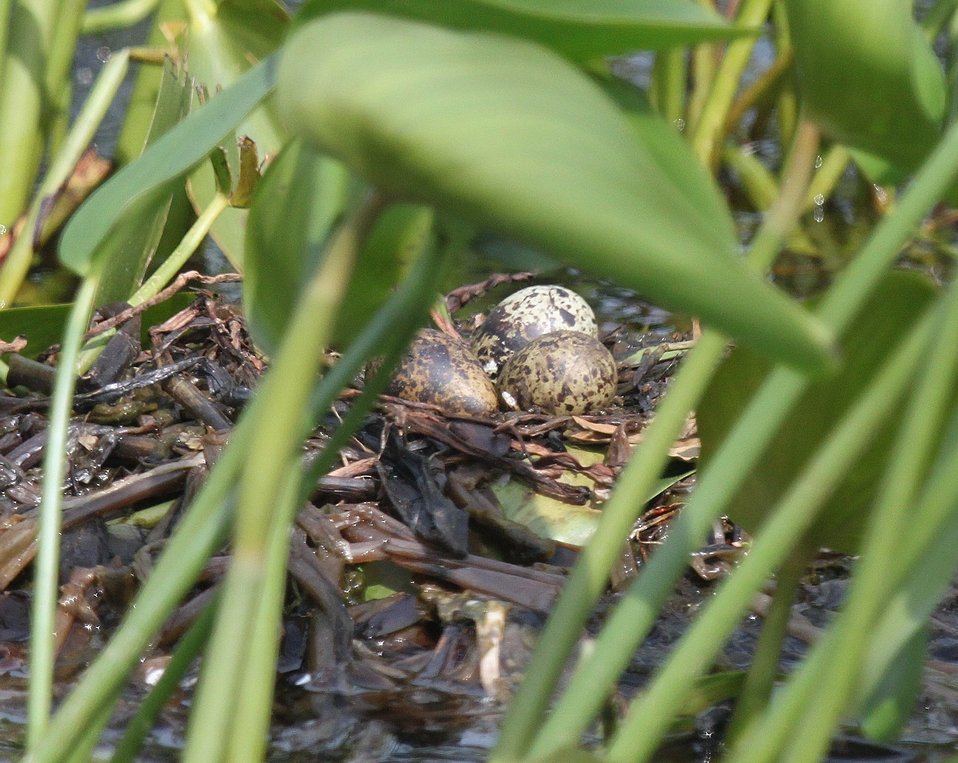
Black tern nest photographed at Missisquoi National Wildlife Refuge